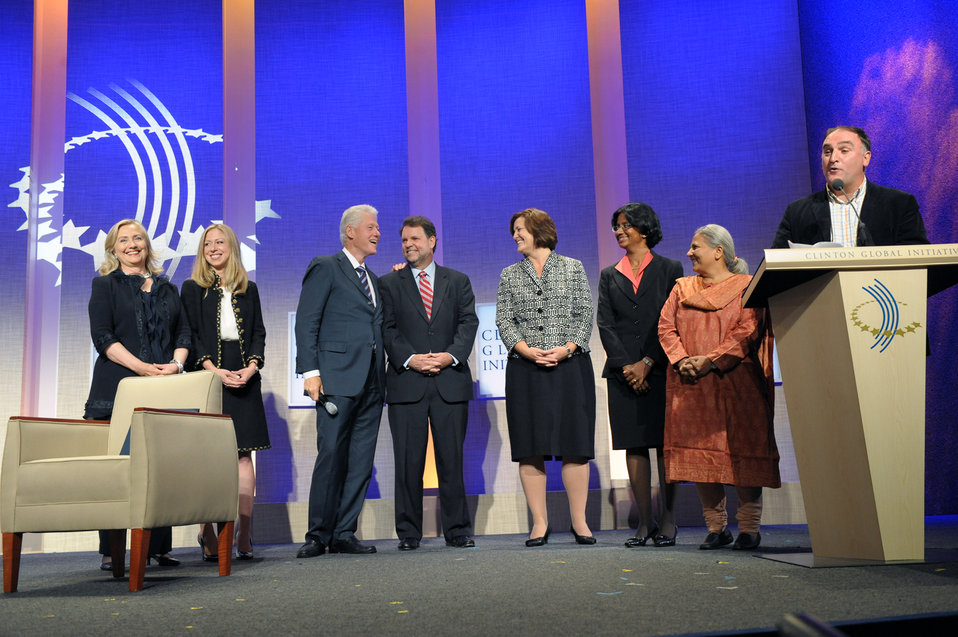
Secretary Clinton and Chelsea Clinton Participate in the Clinton Global Initiative Annual Meeting

U.S. Secretary of State Hillary Rodham Clinton and Chelsea Clinton participate in the Clinton Global Initiative Annual Meeting and hold a one-on-one “conversation” during the Closing Plenary, at the Sheraton Midtown Hotel in New York, New York, on September 22, 2011.